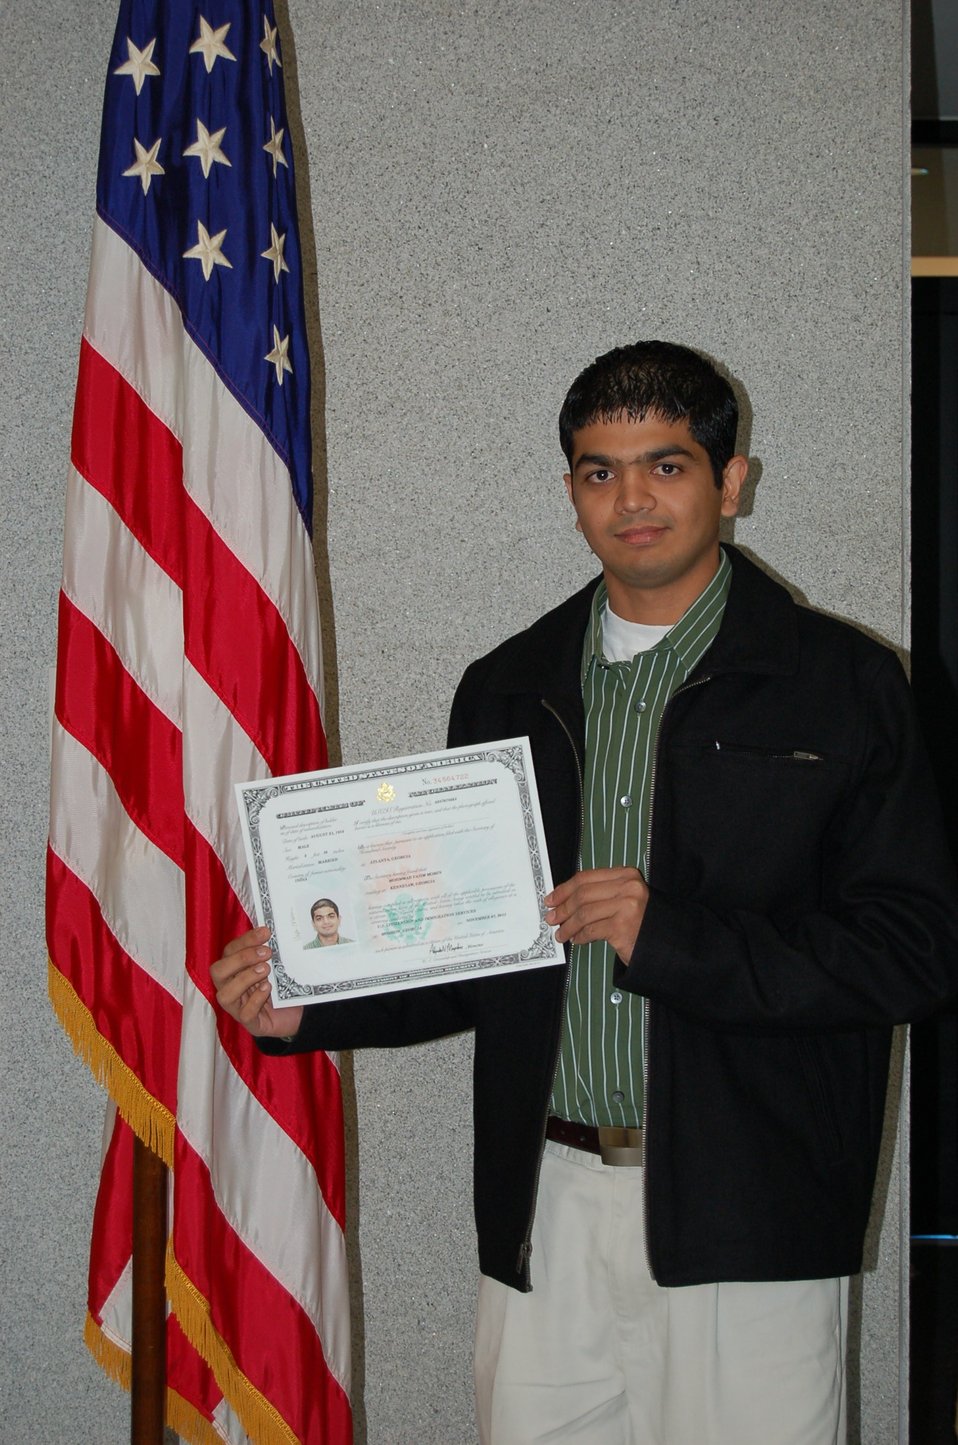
New Citizens